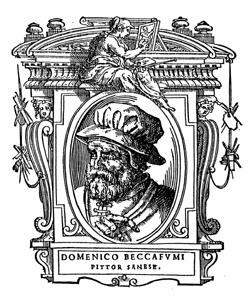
Illustratio from 'Le Vite' by Giorgio Vasari, edition of 1568. For the artist portrayed see filename